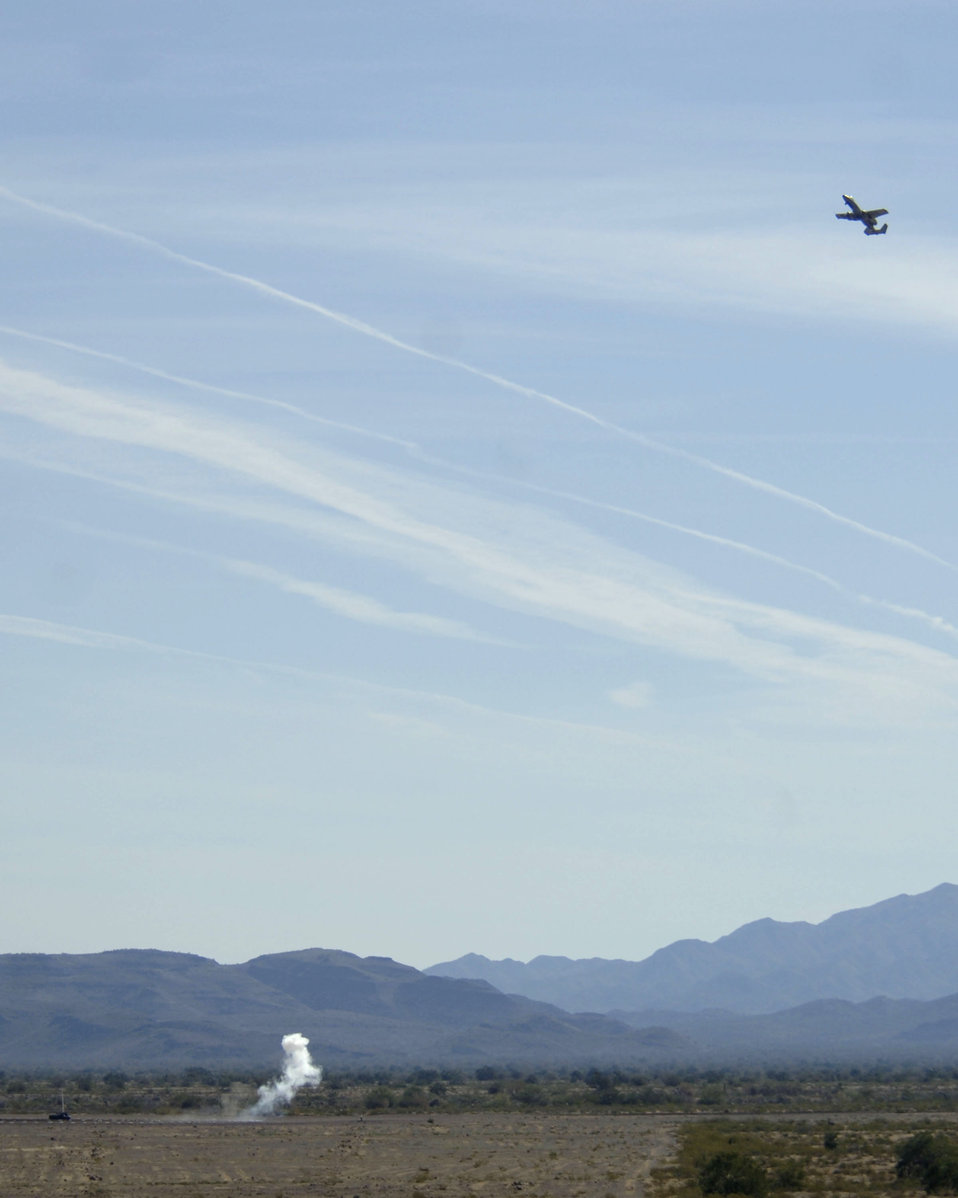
Hawgsmoke 2006

An A-10 Thunderbolt II drops a BDU-33, toward a marked target as part of the 2006 Hawgsmoke competition, Thursday, March 23, 2006, at the Barry-Goldwater Range, Gila Bend Air Force Auxiliary Field. The BDU-33 is a 25-pound training bomb used to simulate the M1a-82 500-pound bomb. As part of the competition, the A-10 Thunderbolt II performs this as a 30 degree dive bomb, 15-degree low angle high drag bomb, and level bombing. . This year's competition coincides with the 30th anniversary of the Warthog. Twenty squadrons from around the world come together to gain the honor of the